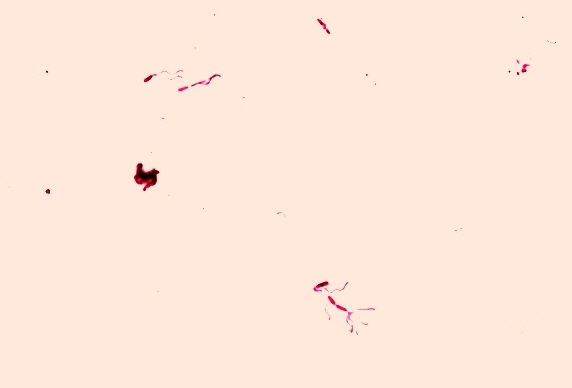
Pseudomonas maltophila. Leifson flagella stain (digitally colorized).